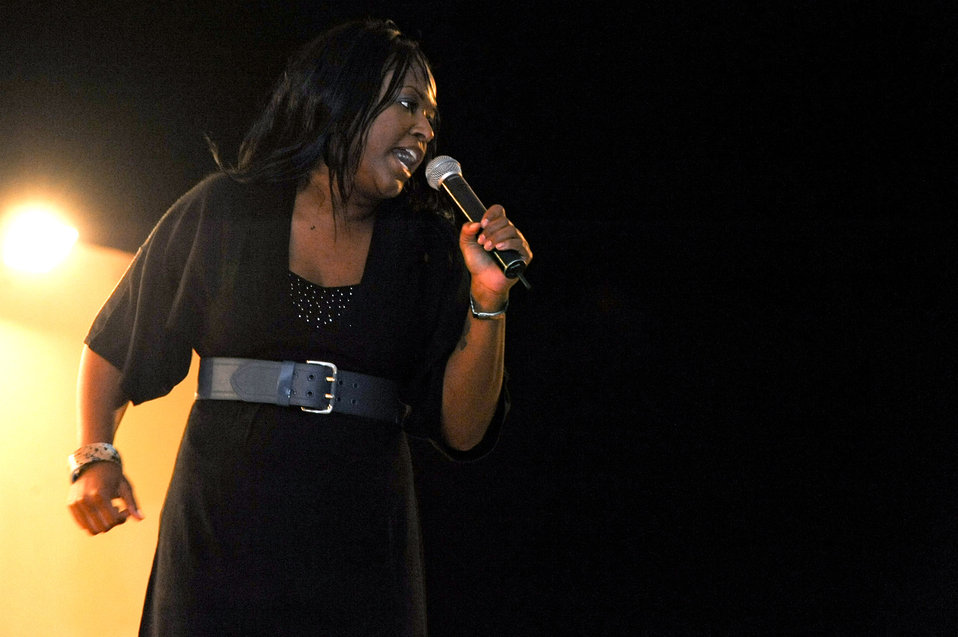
Step it up

Staff Sgt. Ieka Jones performs a rendition of Tina Turner's